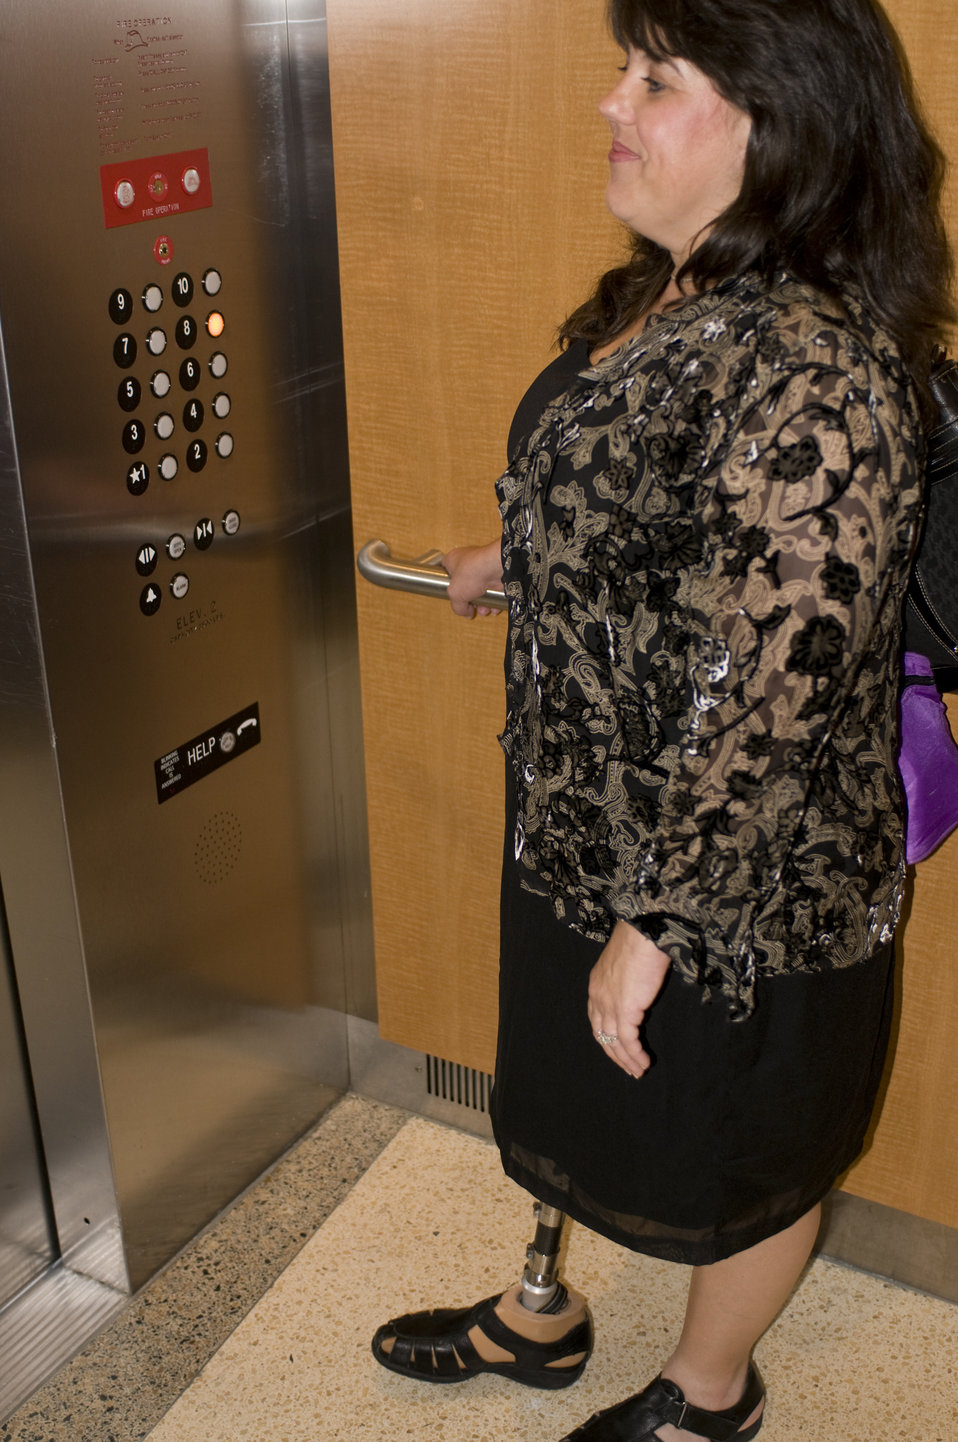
After having boarded this elevator, the woman pictured in this photograph had pressed the desired button, choosing the eighth floor as her destination. Equipped with a right lower limb prosthesis, she was inside a building located on one of the Centers for Disease Control and Prevention's (CDC) campuses, where attention to the environmental details implemented in order to accommodate people with disabilities, is given great consideration when designing the organization's highly-accessible facilities.